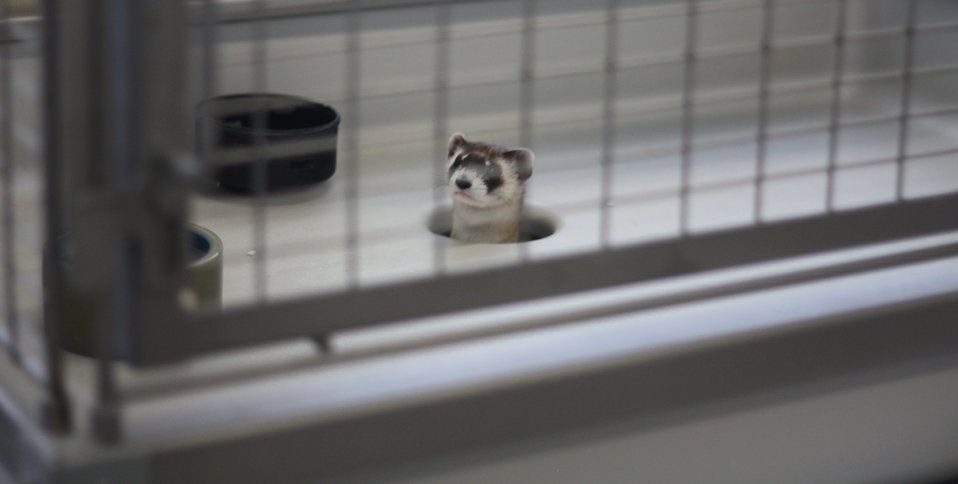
Interns visit the NBFFCC

In the summer of 2012, USFWS Region 6 interns visited the National Black-footed Ferret Conservation Center (NBFFCC) in Colorado to learn how the program reintroduces the endangered Black-footed ferret back into its native habitat.